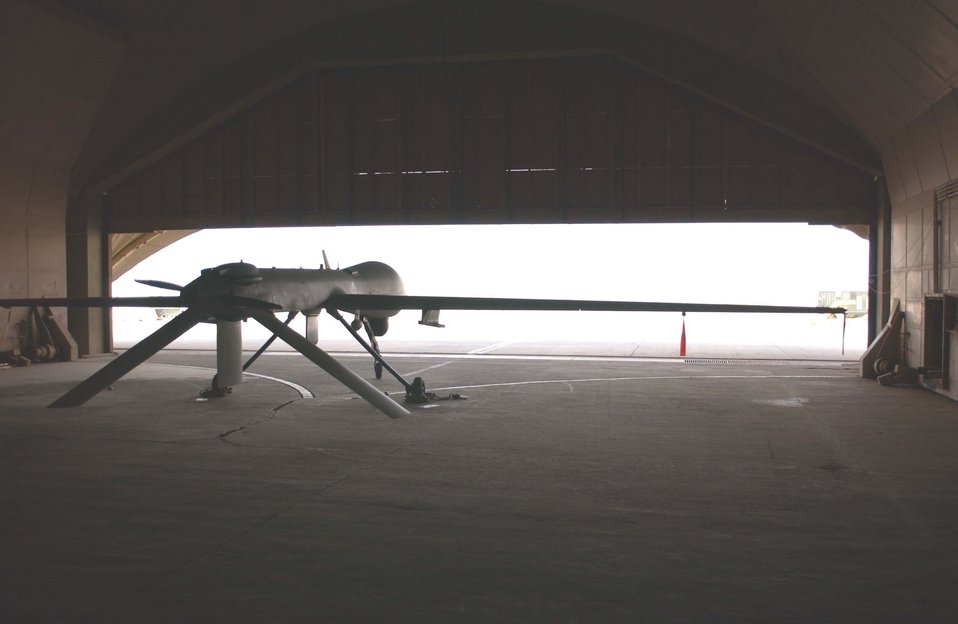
A cool place

An MQ-1 Predator unmanned aerial vehicle is stored between missions in the cool space of a hardened aircraft shelter at Balad Air Base, Iraq, on July 31. With flying missions that last an average of 20 hours, Airmen from the 46th Expeditionary Reconnaissance Squadron provide ground commanders